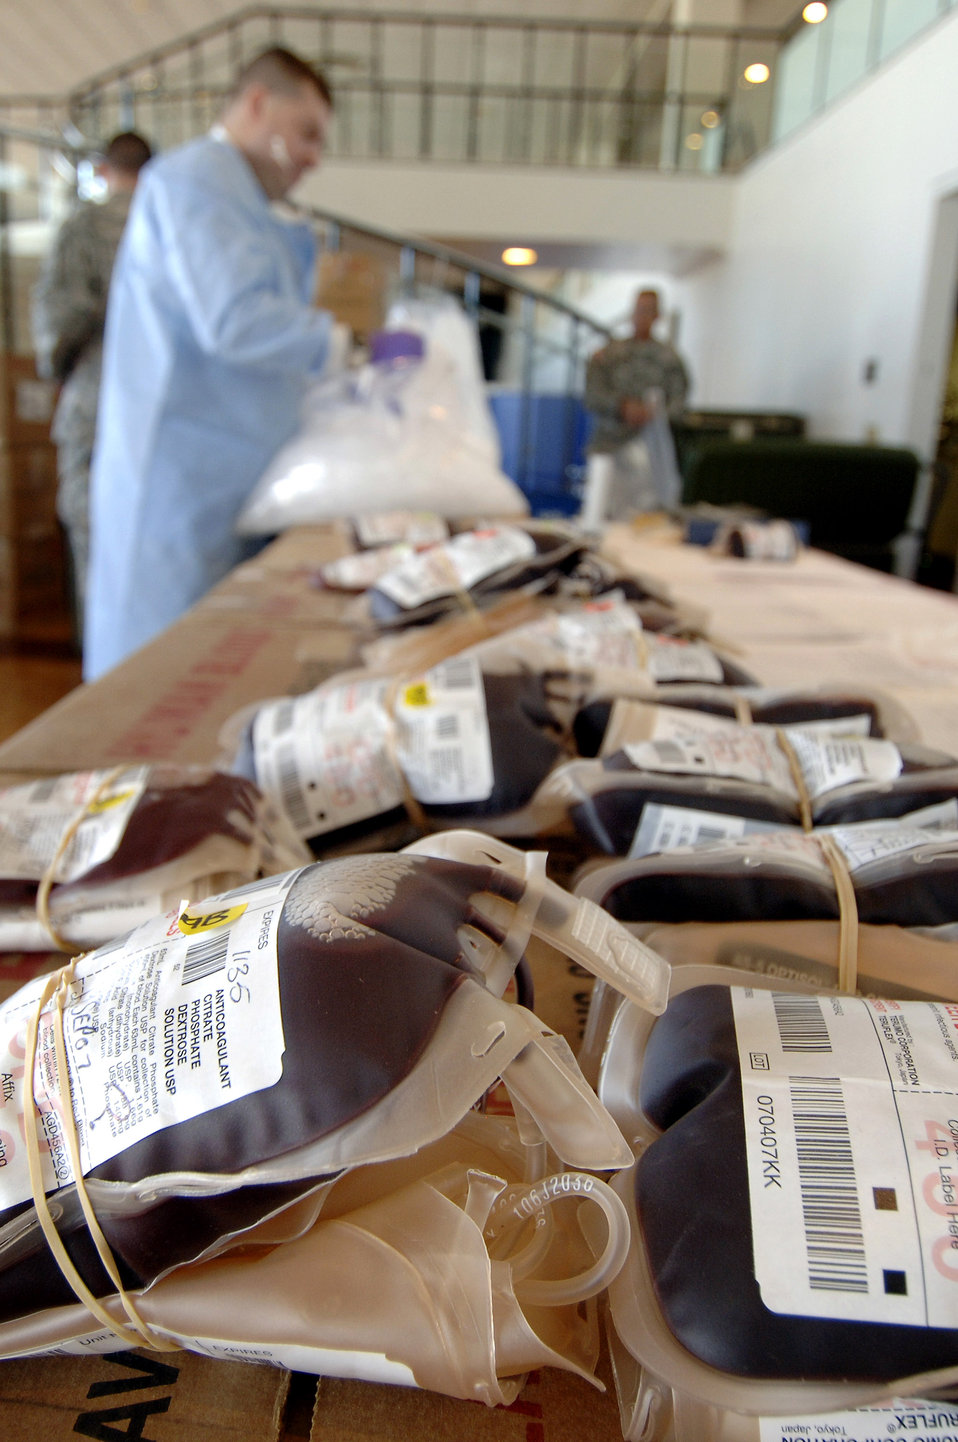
Giving the gift of life

Army Spc. Benjamin Miller of Fort Bliss, Texas, processes blood donated during a blood drive held in the Arnold Hall ballroom Sept. 19 at the U.S. Air Force Academy in Colorado. Blood collected will benefit armed forces members by helping to meet the urgent needs of wounded Americans in Iraq and Afghanistan.